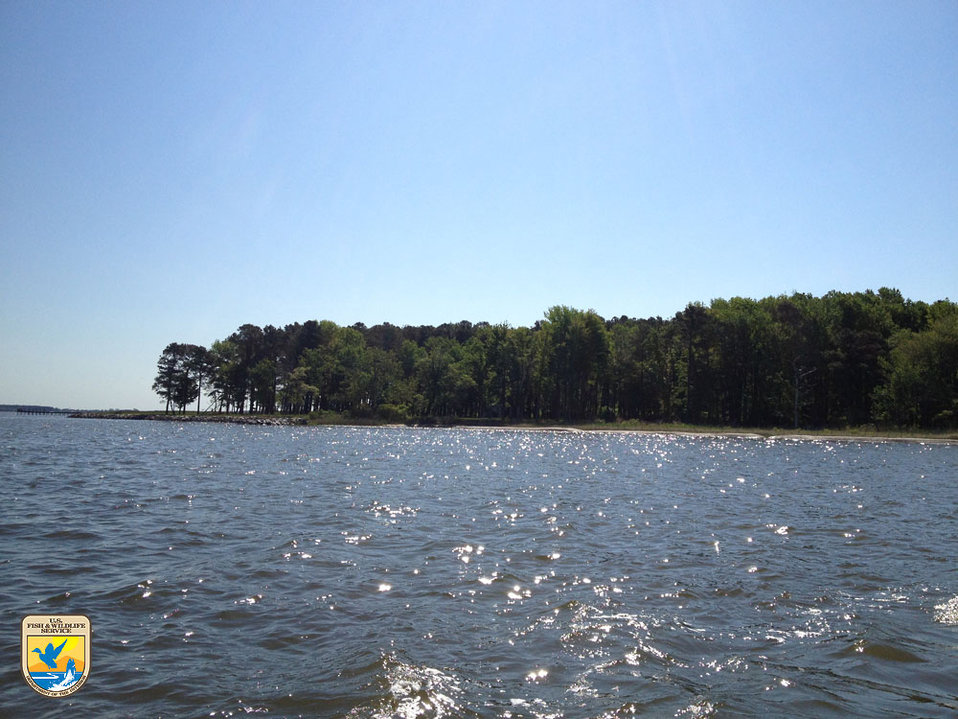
Poplar Island

A view of Poplar Island on the Chesapeake Bay.